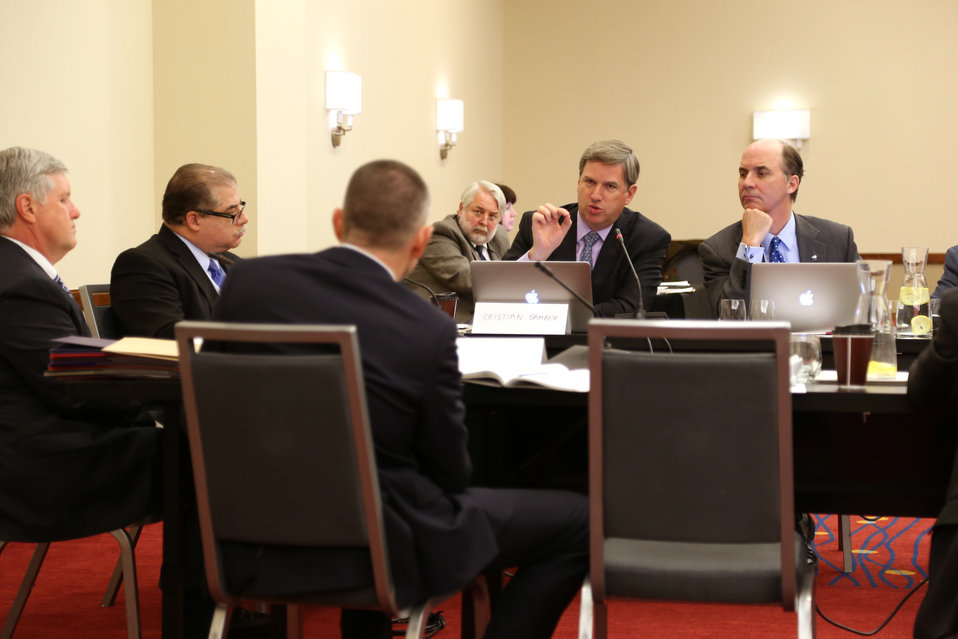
Wildlife Trafficking Advisory Council Meeting March 20, 2014